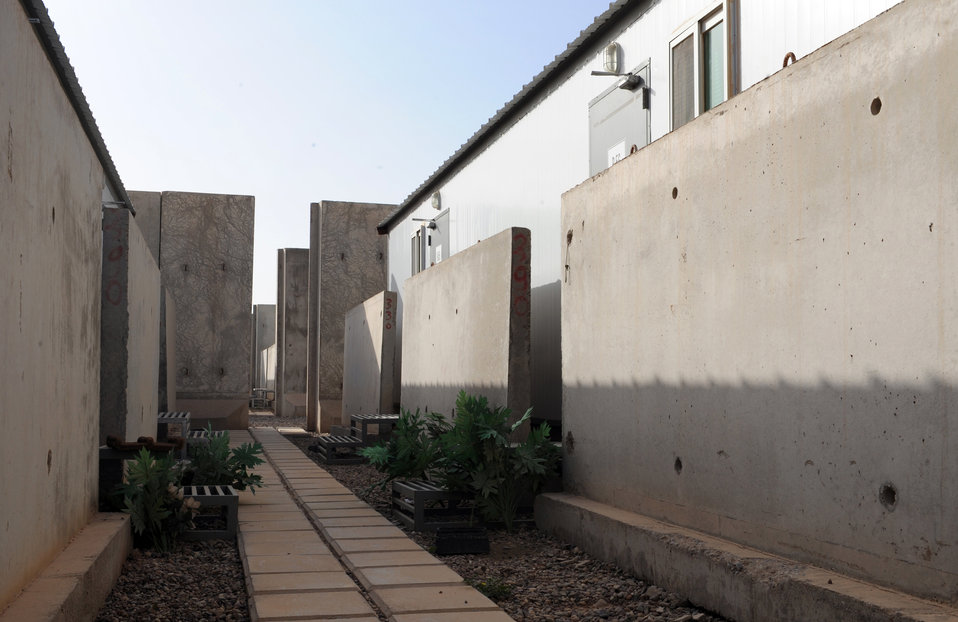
Airmen reflect on 6th anniversary of Operation Iraqi Freedom

Containerized housing units typically house two servicemembers per unit at Joint Base Balad, Iraq. They are capable of housing up to four personnel at any given time. Previously, servicemembers lived in tents.